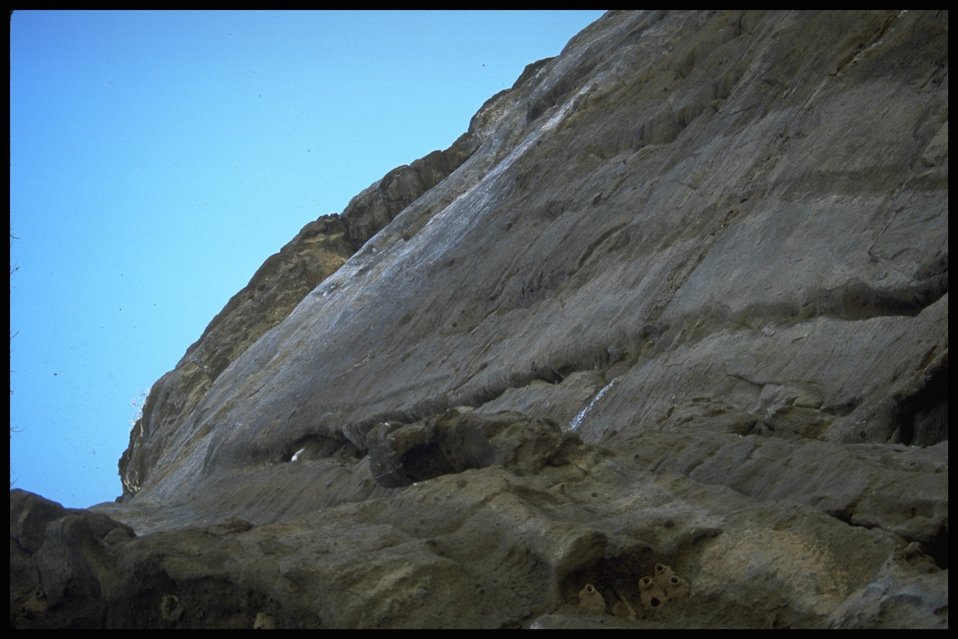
Scenic view, Ft. Rock, Lakeview District.